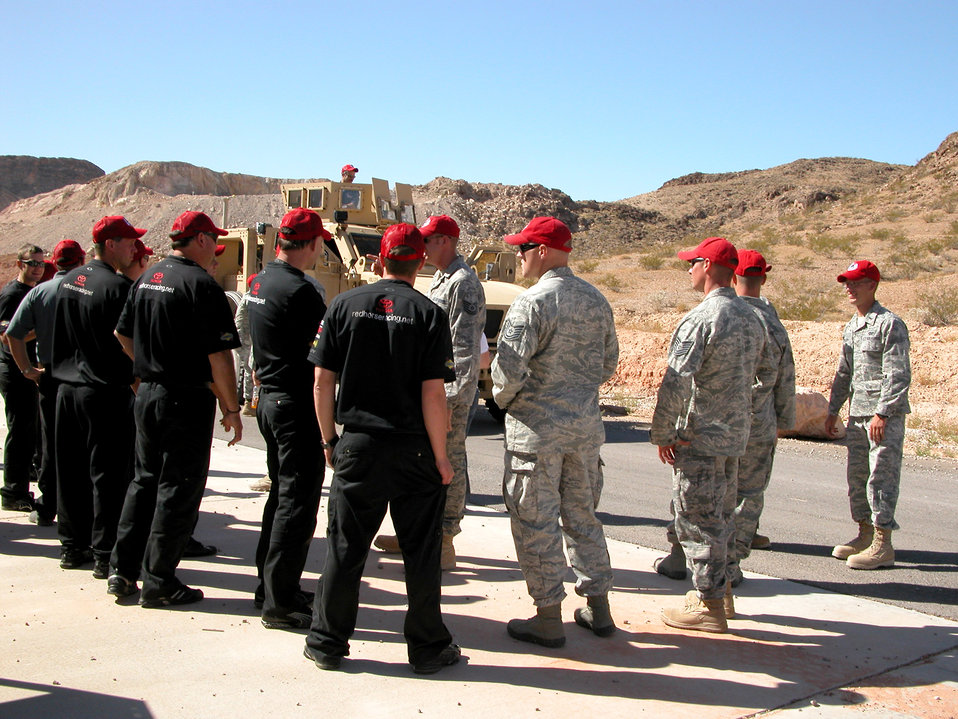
RED HORSE meets NASCAR

Members of the 820th RED HORSE Squadron explain to members of NASCAR's Red Horse Racing team the capabilities of a mine-resistant, ambush-protected all-terrain vehicle during a base visit Sept. 24, 2010, at Nellis Air Force Base, Nev. The two